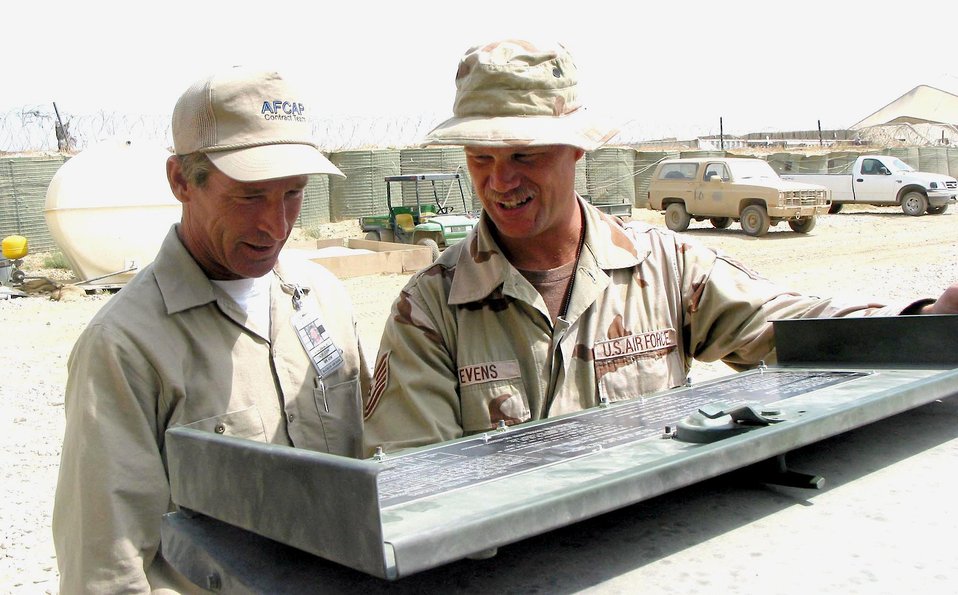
Power generators

BAGRAM AIR BASE, Afghanistan - Contractor David Saville and Tech. Sgt. Lee Stevens review procedures for the power generator that feeds the air traffic control tower here. Saveille will replace Stevens in September.